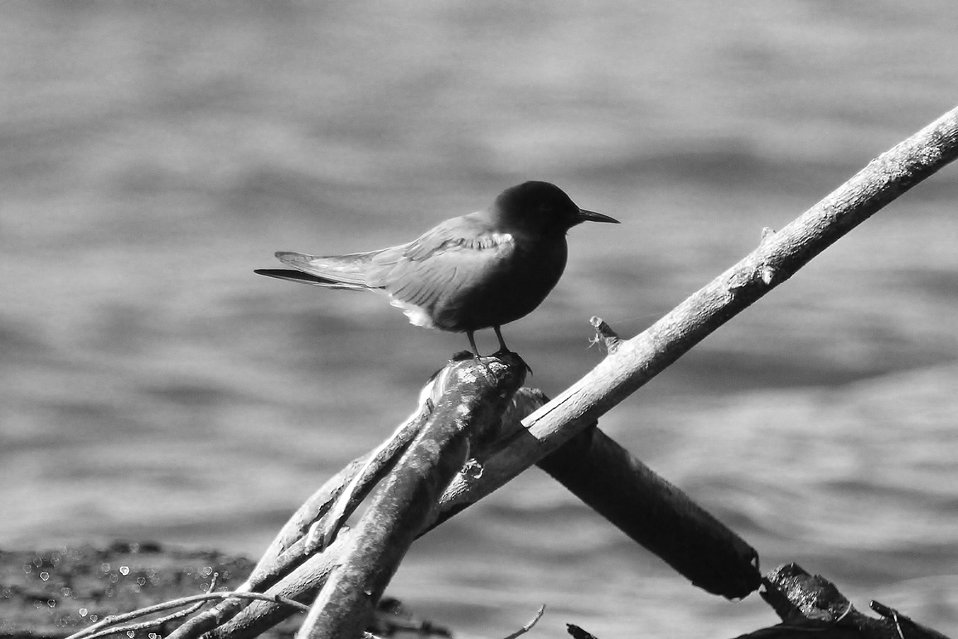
Black tern at Missisquoi National Wildlife Refuge